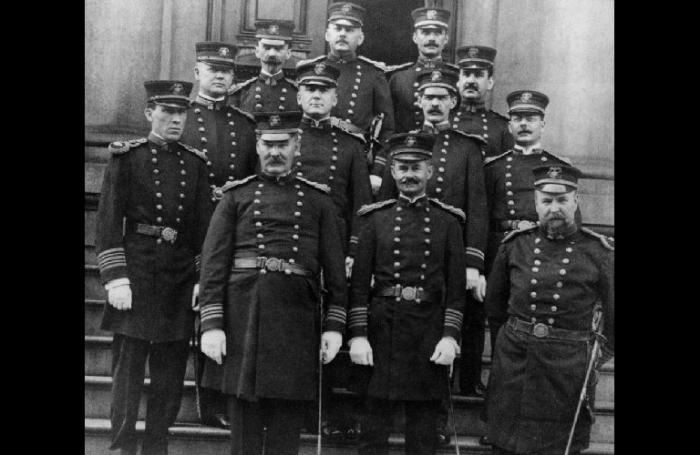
Public Health Service Examining Board, circa 1912.